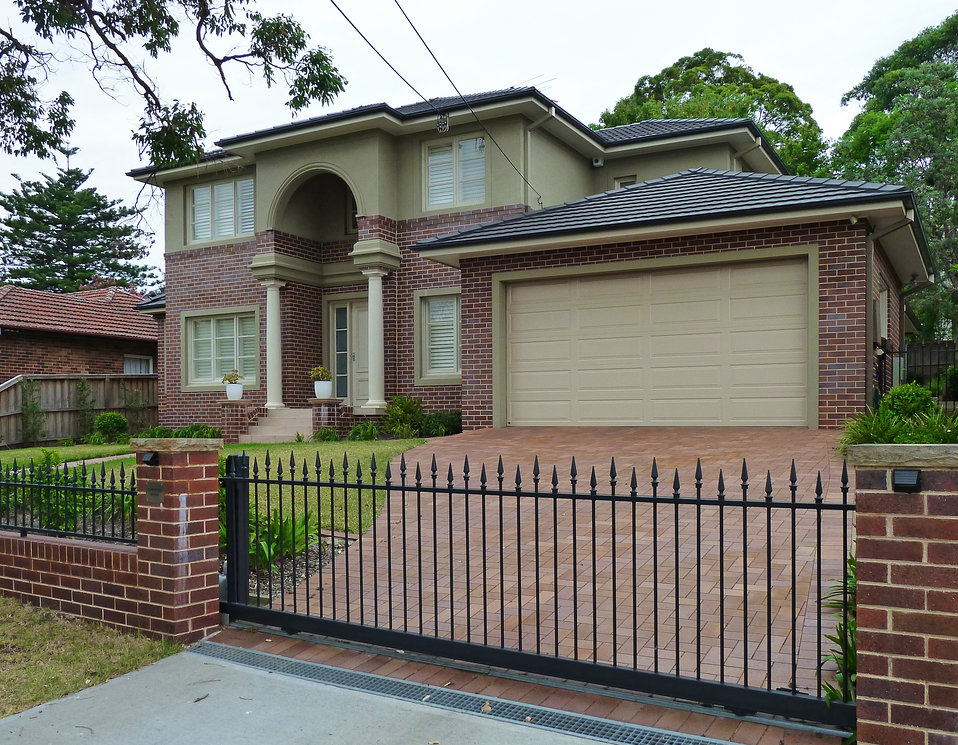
11 Marjorie Street, Roseville, New South Wales, Australia.